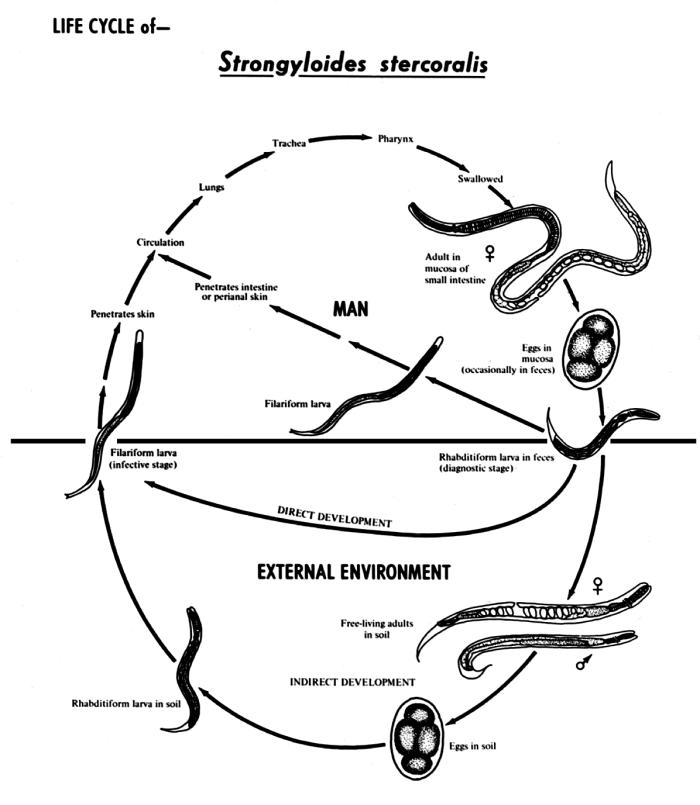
This diagram depicts the various stages in the life cycle of the Strongyloides stercoralis nematode.